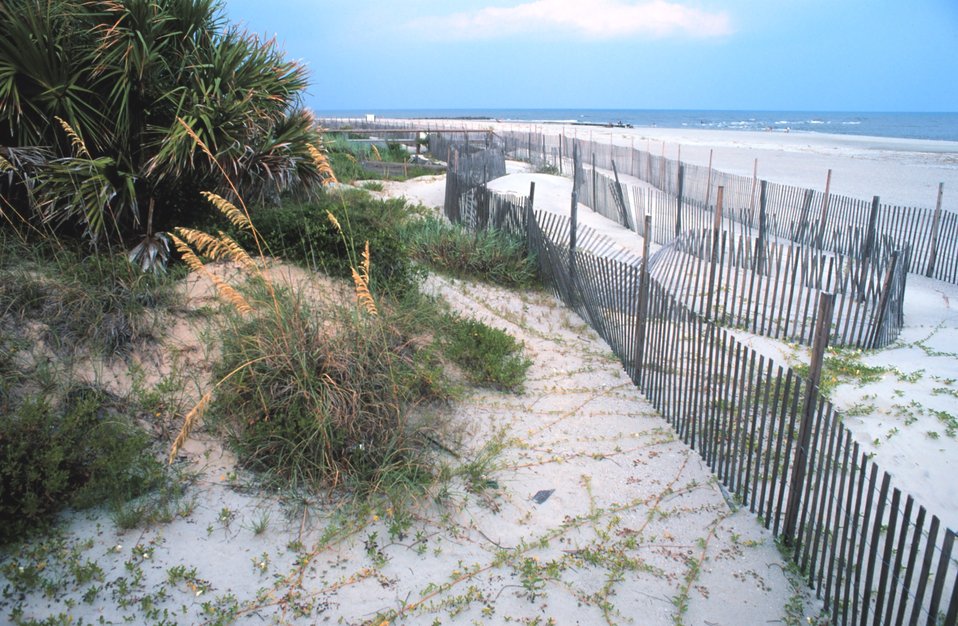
The beach at Tybee Island. Fences help reduce erosion.